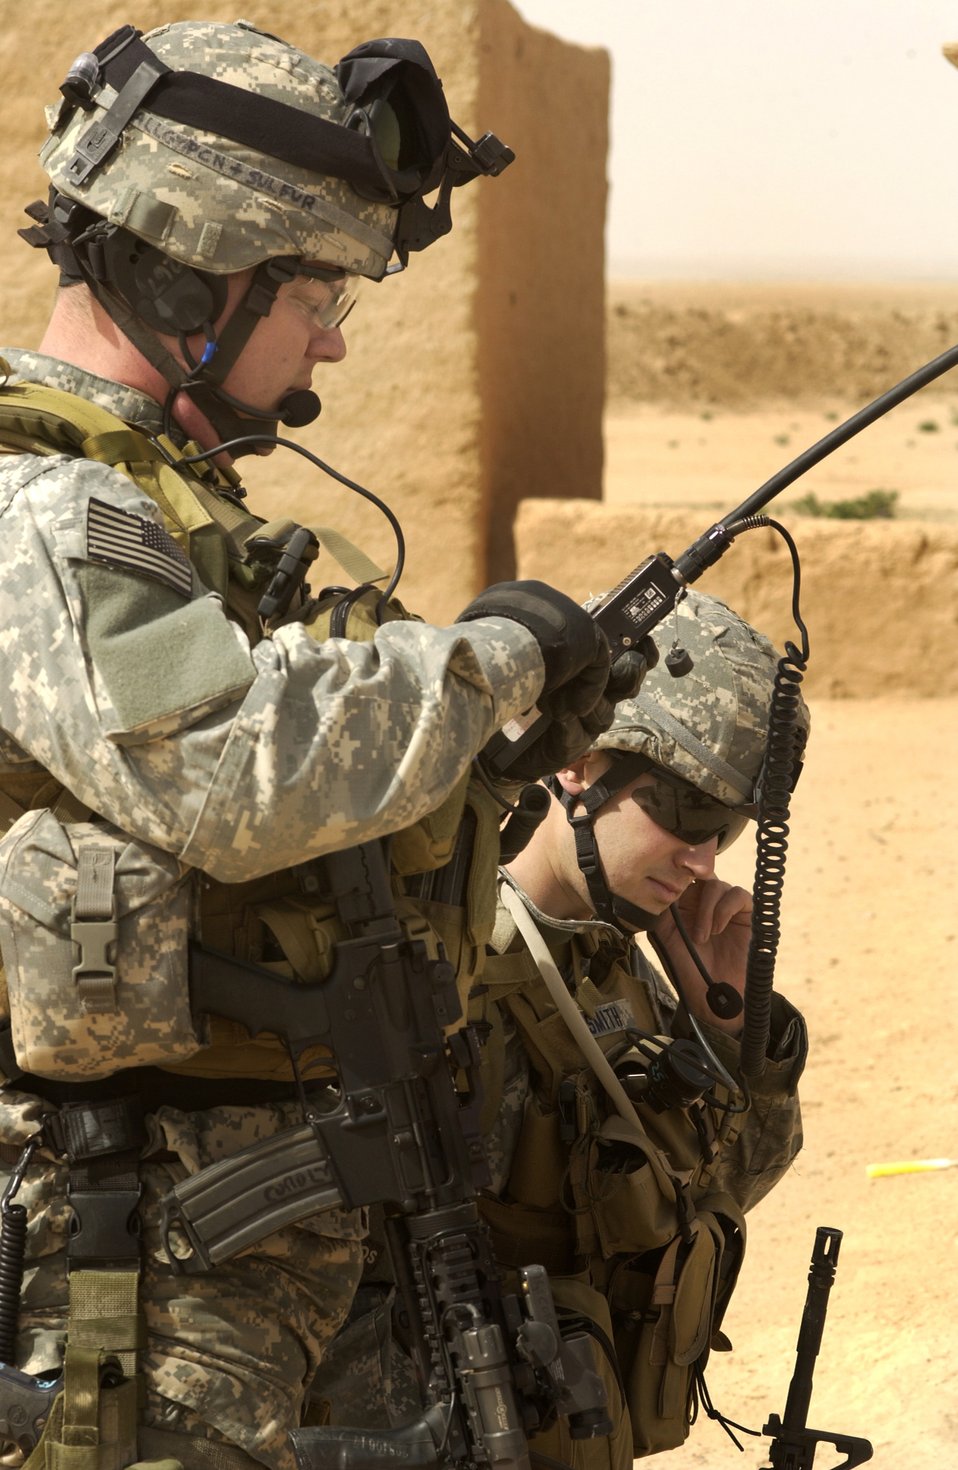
Air assault

Joint air controllers, Tech. Sgt. Justin Corder, left, and Airman 1st Class Steven Smith from the 1st Brigade, 1st Armored Division, establish communications with aircraft during an air assault in the Al Jazeera Desert, Iraq, on Wednesday, March 22, 2006.